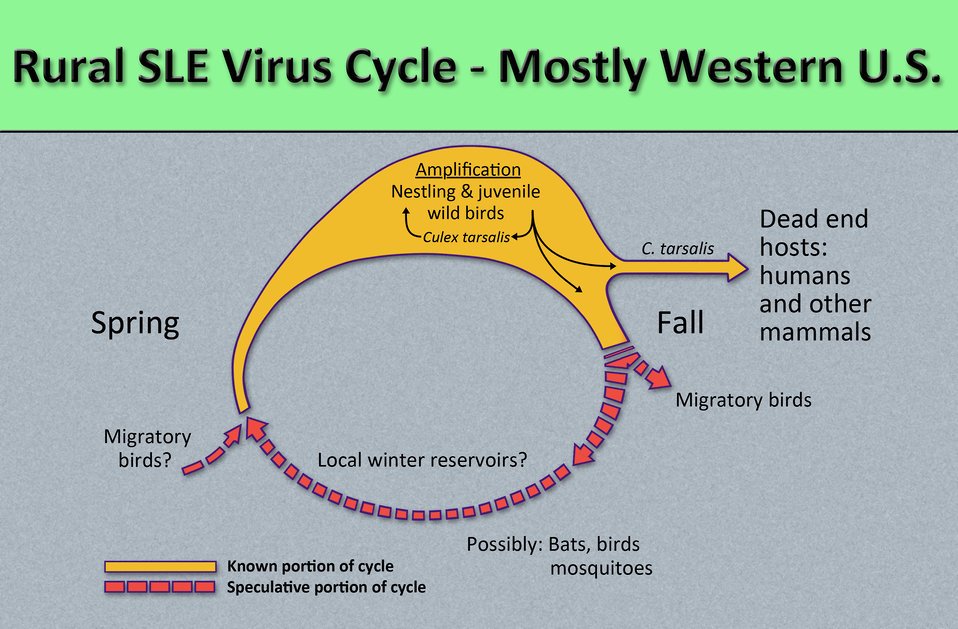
This diagram illustrates the methods by which the arbovirus, St. Louis encephalitis virus (SLEV) reproduces and amplifies itself in rural avian populations, and is subsequently transmitted to dead end hosts including humans and other mammals by the Culex tarsalis mosquito.